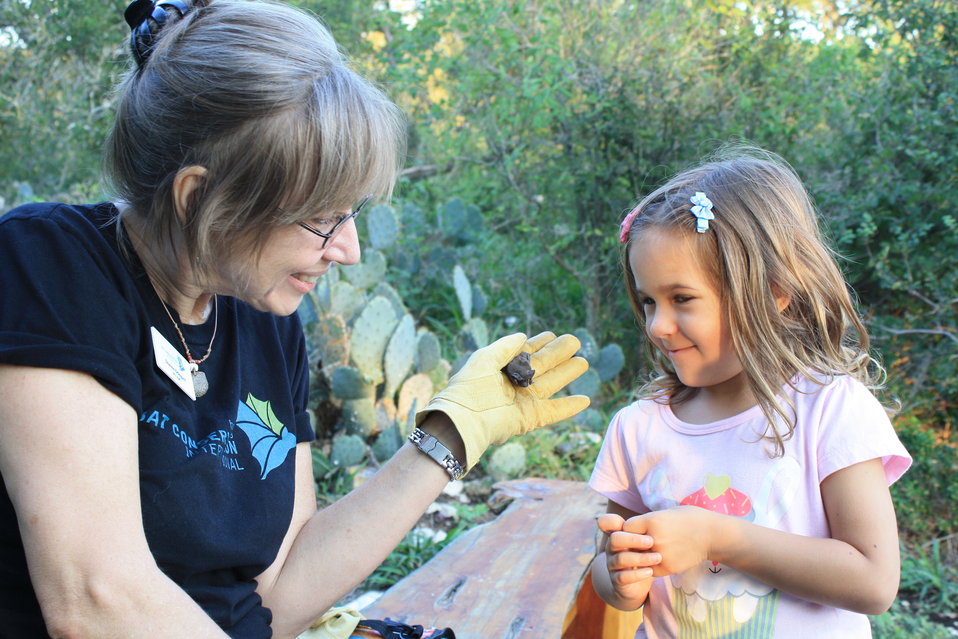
BCI staff with bat

BCI educator Dianne Odegard shows visitor a Mexican free-tailed bat